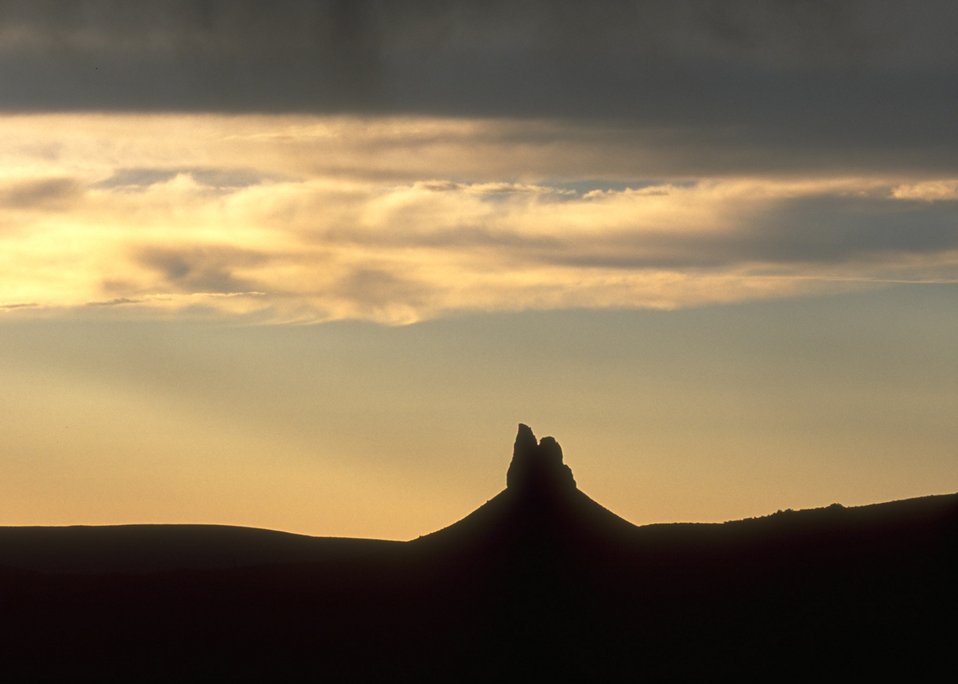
Boar's Tusk at sunset, Rock Springs Field Office.